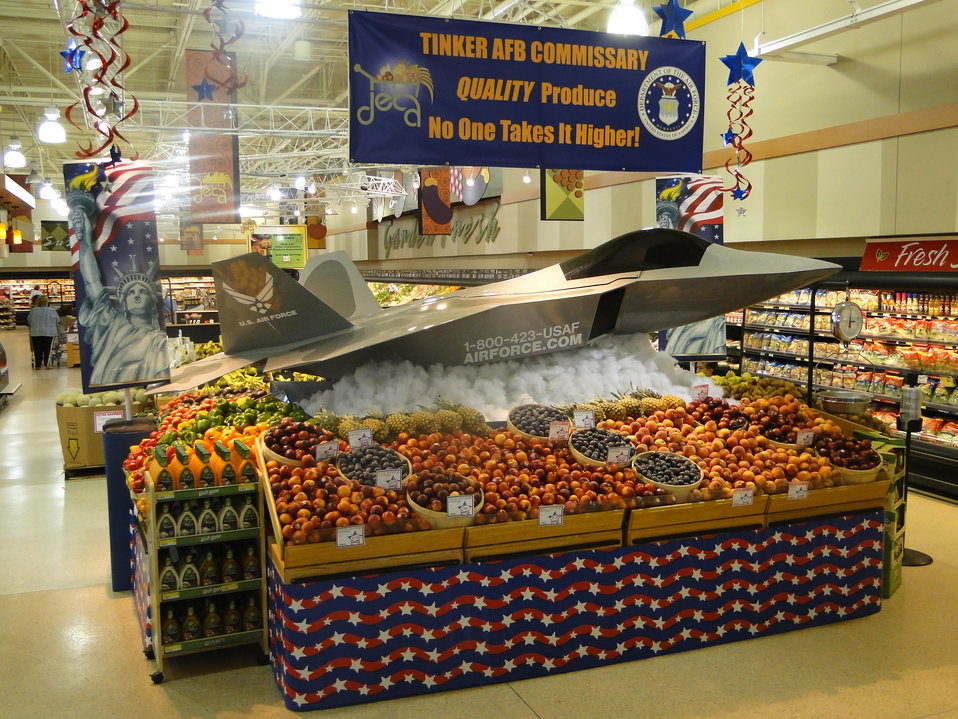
DeCA named ‘Role Model’ in promoting fruits, vegetables

This F-22 Raptor advanced tactical fighter model, which is actually a go-cart, takes produce sky high at the commissary at Tinker Air Force Base, Okla. Tinker commissary managers won their second straight “best large U.S. store” award. Ten commissaries worldwide earned honors in 2010 during the 10th Annual Produce Merchandising Contest. The annual competition highlights the Defense Commissary Agency’s role as nutritional leader for the Department of Defense. Winning stores excelled in quality and team performance in areas such as creative displays, customer education events and increased produce sales.